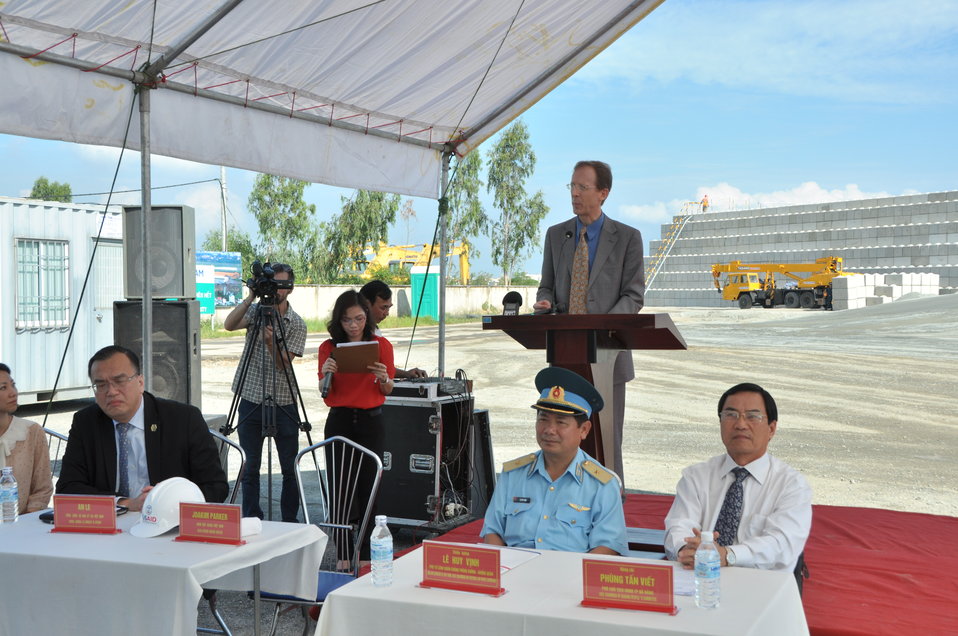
Media Tour of Environmental Remediation of Dioxin Contamination at Danang Airport

USAID Mission Director Joakim Parker addresses the media
Danang, Vietnam
April 24, 2013